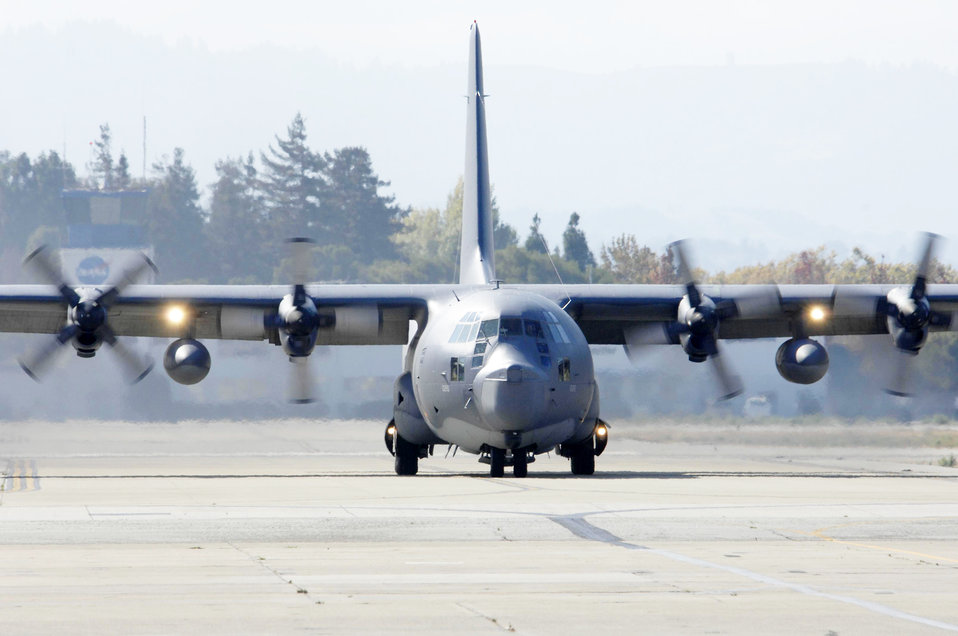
Guard members demonstrate digitally aided personnel recovery operations

The 129th Rescue Wing sent 23 Guard members and an MC-130P Combat Shadow aircraft, similiar to this one, equipped with a prototype situation awareness system during Bold Quest 2009 to Marine Corps Air Station Cherry Point, N.C., to assess technical and procedural solutions to improve the combat effectiveness of coalition forces, according to the JFCOM Web site.